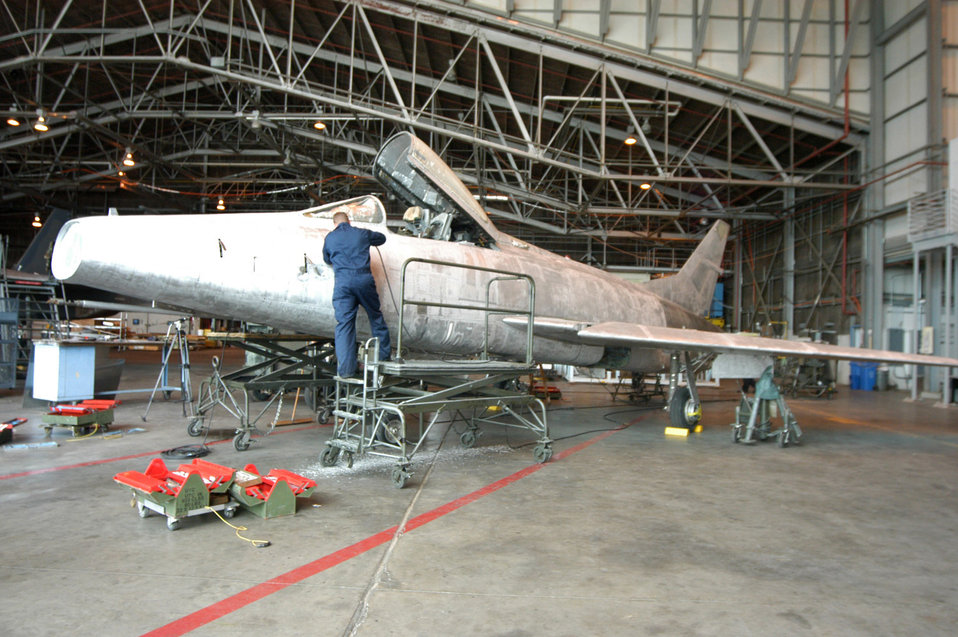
Preserving history

ROBINS AIR FORCE BASE, Ga. -- Airmen of the 653rd Combat Logistics Support Squadron provide corrosion control for the museum of aviation's F-100. There are six museum aircraft on the base's flightline scheduled for corrosion work.